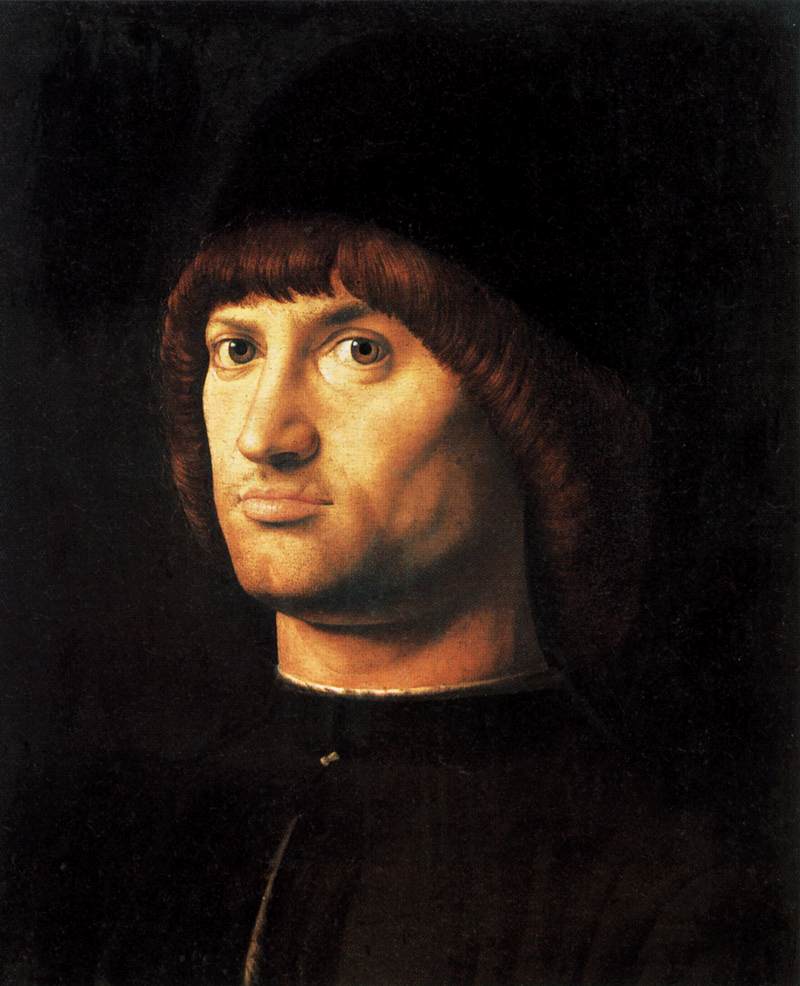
AntonelloCondottiere